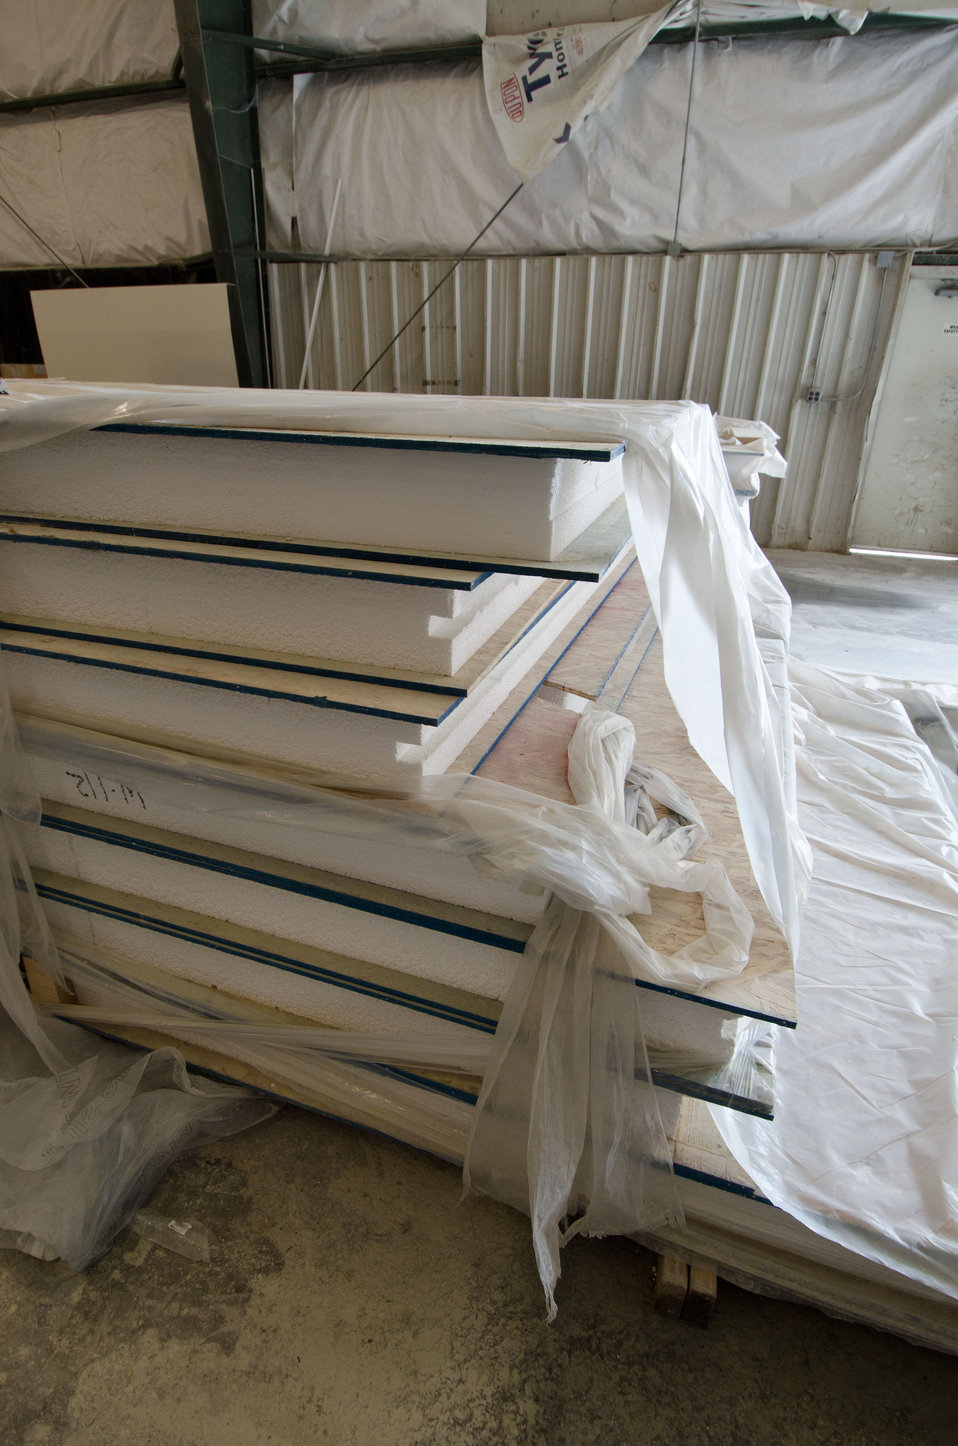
Extra thick foam filled floors and exterior walls add to the climate sealing and energy efficiency of a new type of manufactured home from Stardust Industries on Wednesday, July 13, 2011 in Monticello, KY. They are helping retool and redirect Kentucky’s houseboat manufacturing industry – which has been decimated because of the struggling economy – by using its facilities and manpower to create low-cost housing that is energy efficient. Rural Development obligated $499,000 in Rural Business Enterprise Grant funds to support this unique endeavor. Up until a few years ago, there were several successful houseboat manufacturers in the four-county area surrounding the city of Somerset. Most have now ceased operation or drastically reduced output, which has led to dramatic, long-term job loss. These new energy efficient homes will be constructed in redesigned, refitted houseboat factories using local workers that have been retrained.